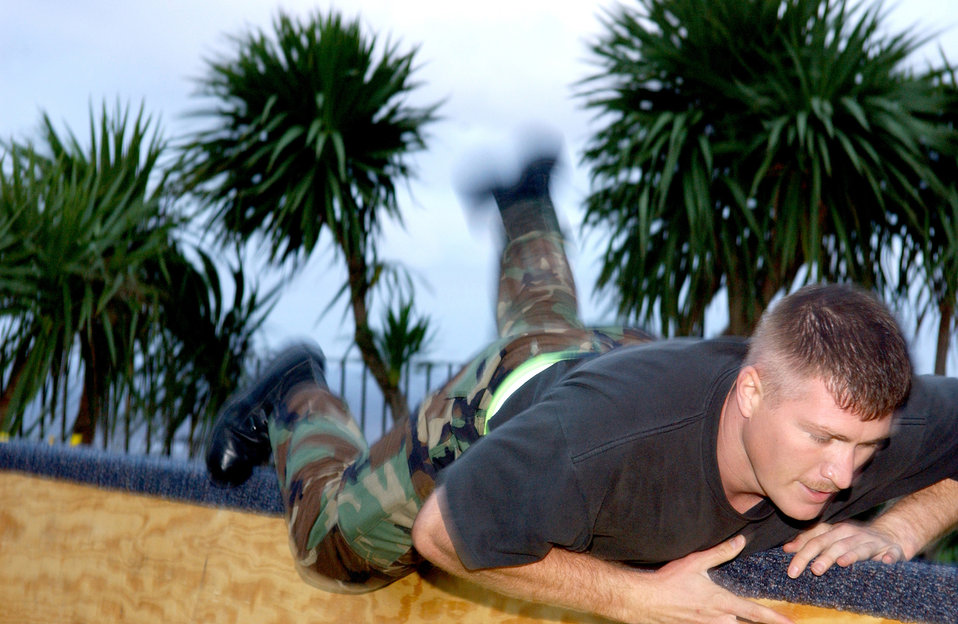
Up and over

LAJES FIELD, Azores -- Staff Sgt. Martin Edwards jumps over a wall during the base's quarterly Warrior Day here recently. During Warrior Day, Warrior Day teams of four participants from each squadron compete in an obstacle course. Sergeant Edwards is assigned to the 65th Logistics Readiness Squadron.